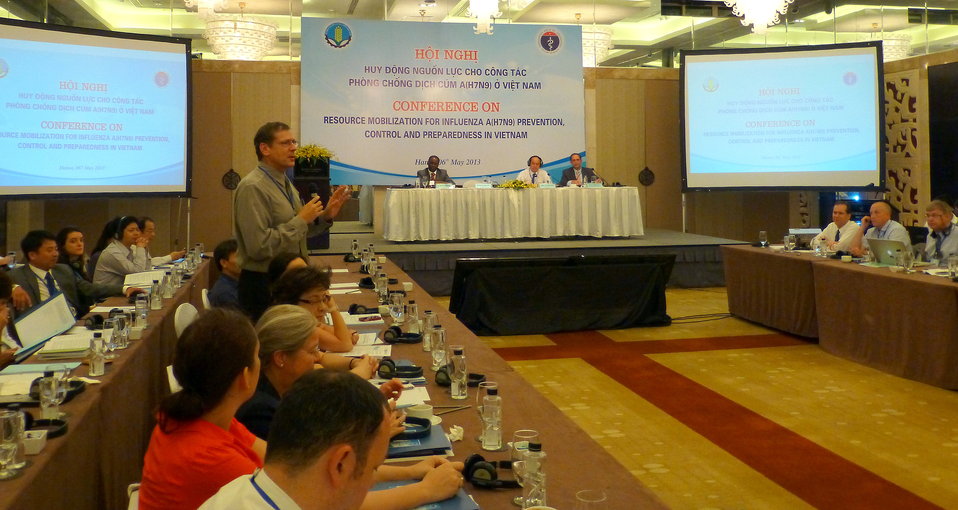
Dr. Tim Meinke, USAID, speaks at the Conference on Resource Mobilization for Influenza A (H7N9) Prevention, Control and Preparedness in Vietnam

Hanoi, May 6, 2013
Supported by USAID Vietnam